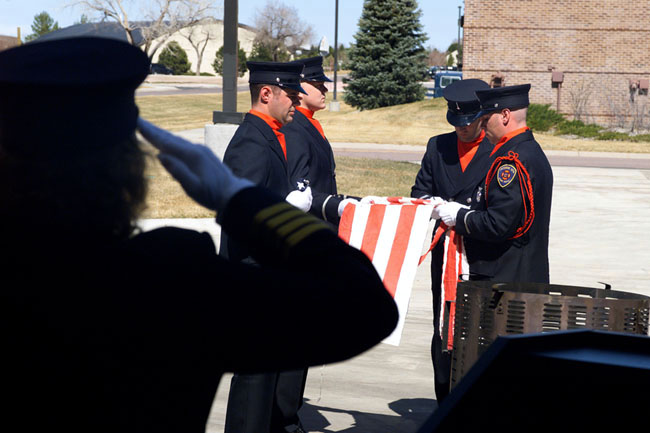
Flag ceremony a success

PETERSON AIR FORCE BASE, Colo. -- The 21st Civil Engineer Squadron's fire protection flight here burned 50 U.S. flags recently. The flight's color guard conducted its first ceremony to give unserviceable U.S. flags a proper disposal. The ceremony was such a success that the flight has decided to conduct them quarterly.